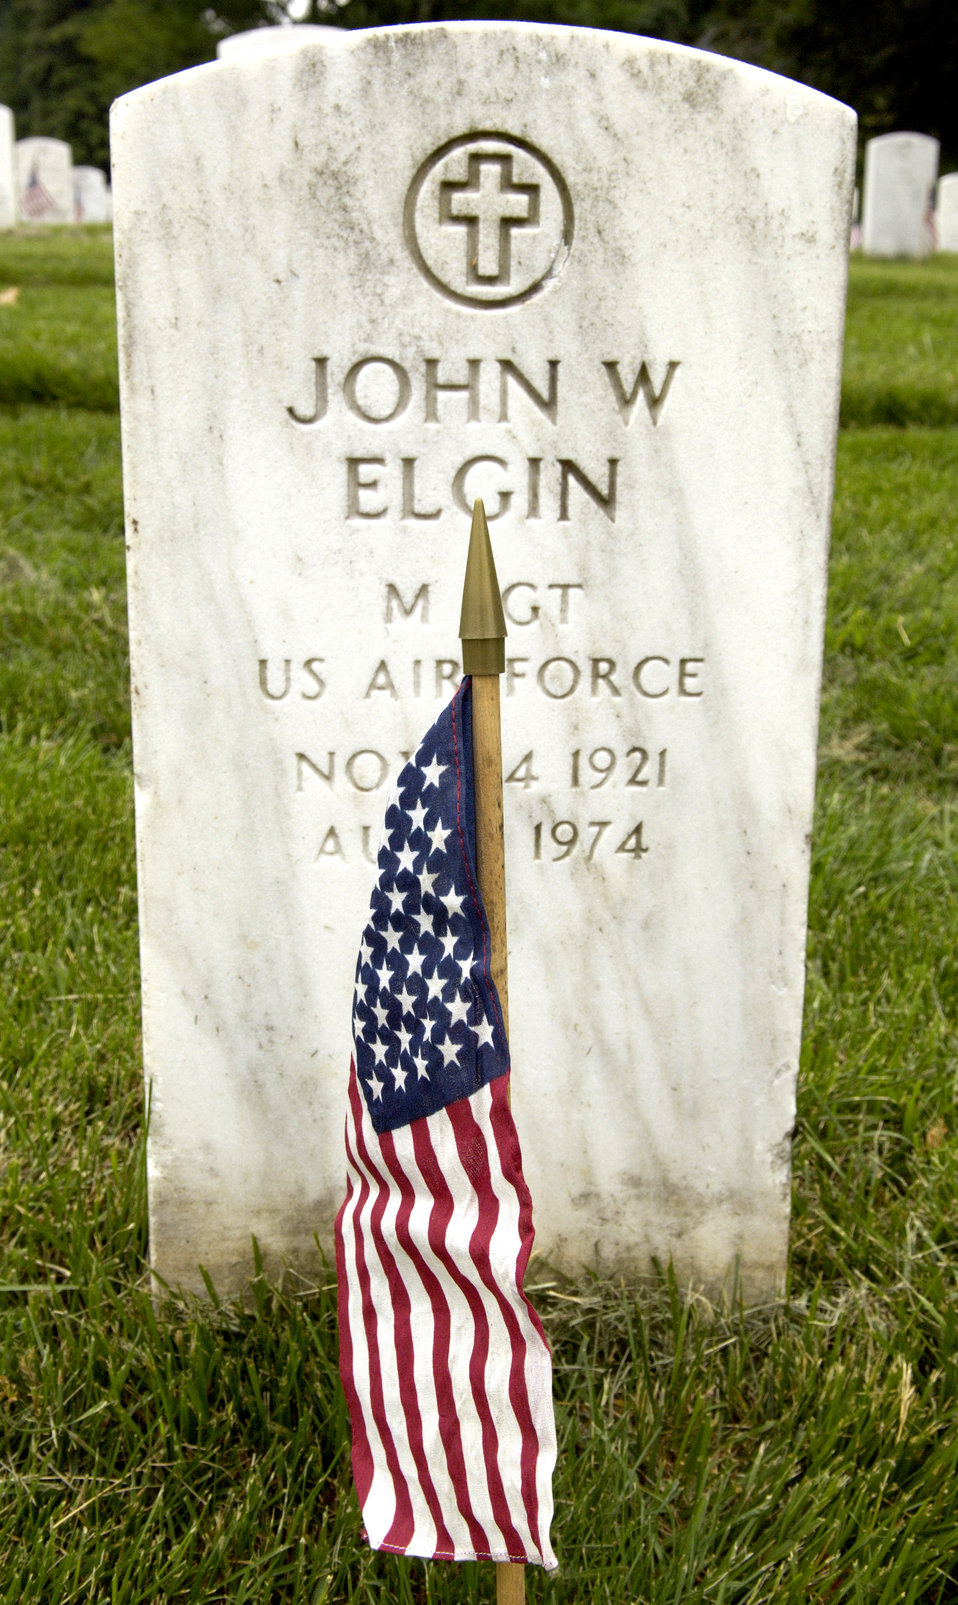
In remembrance

Soldiers, Sailors, Airmen and Marines from across the Washington D.C. area joined forces to place more than 227,000 flags at the front of headstones at Arlington National Cemetery on Thursday, May 25, 2006. The flags will remain at the headstones through Memorial Day.